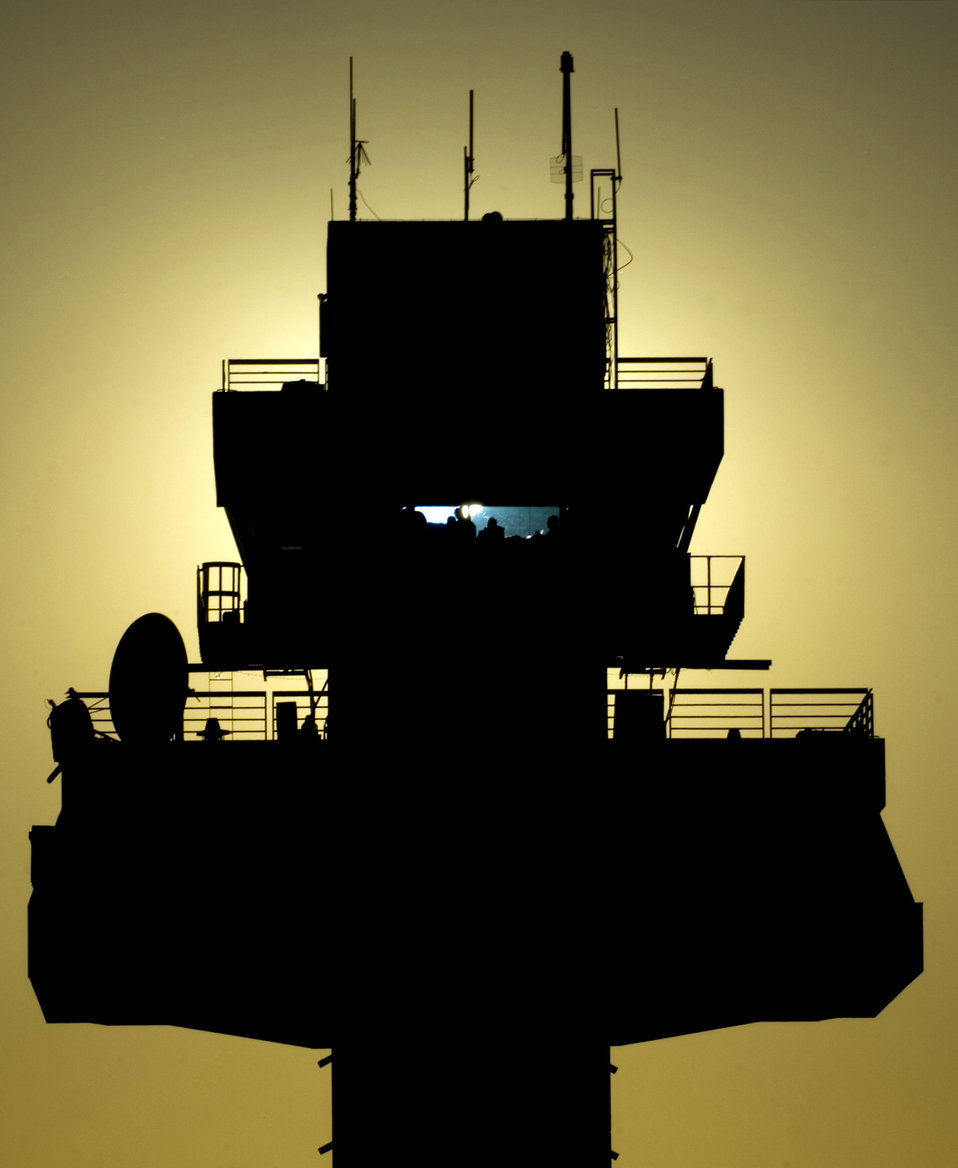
Airmen reflect on 6th anniversary of Operation Iraqi Freedom

The setting sun silhouettes the air traffic control tower Dec. 18, 2008, at Joint Base Balad, Iraq. Airmen of the 332nd Expeditionary Operations Support Squadron controls aircraft from this tower.